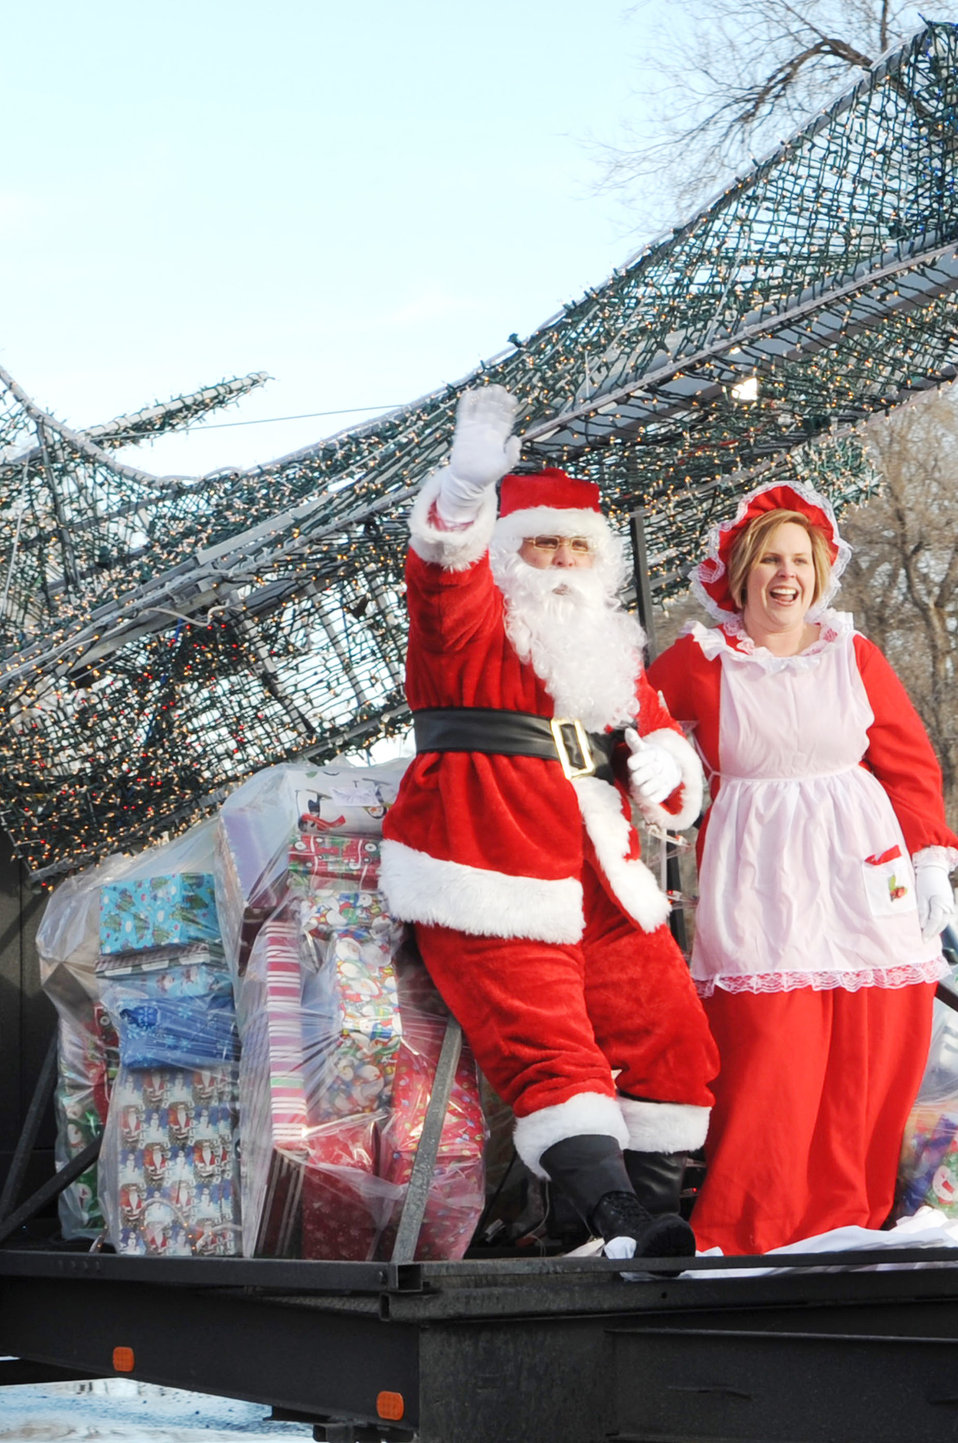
Ellsworth members support Angel Tree program

Santa and Mrs. Claus arrive at the Youth and Family Services child care center Dec. 17, 2009, in Rapid City, S.D. Santa, also known as Master Sgt. Cary Loeffler, the 28th Operations Support Squadron aircrew fight equipment assistant superintendent, and his wife began the Angel Tree program at Ellsworth Air Force Base, S.D., by introducing a traveling tree throughout the 28th OSS.